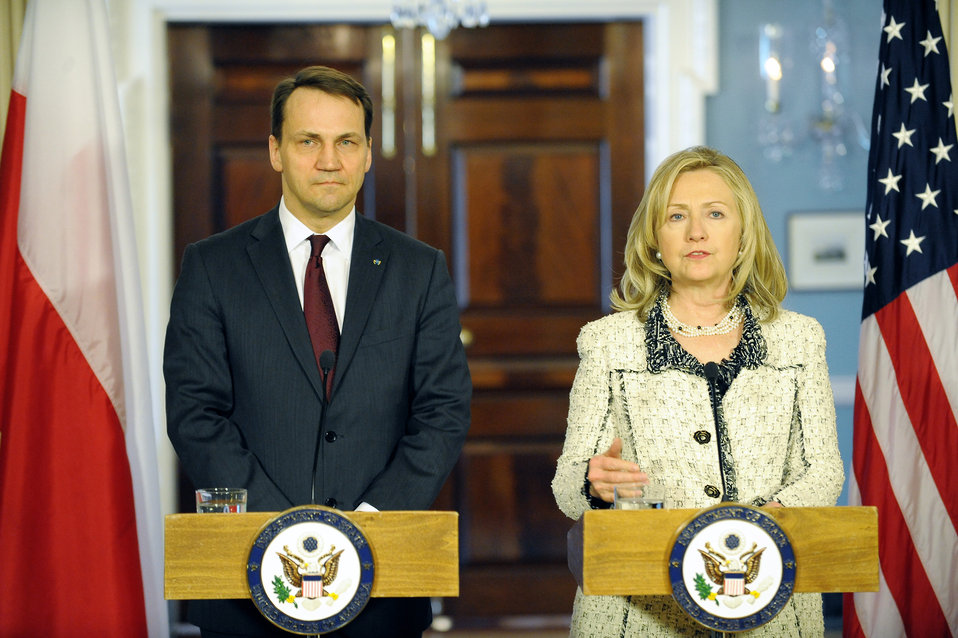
Secretary Clinton and Polish Foreign Minister Sikorksi Address Reporters

U.S. Secretary of State Hillary Rodham Clinton holds a joint press conference with Polish Foreign Minister Radosław Sikorski after their bilateral meeting at the U.S. Department of State in Washington, D.C., on March 7, 2012.